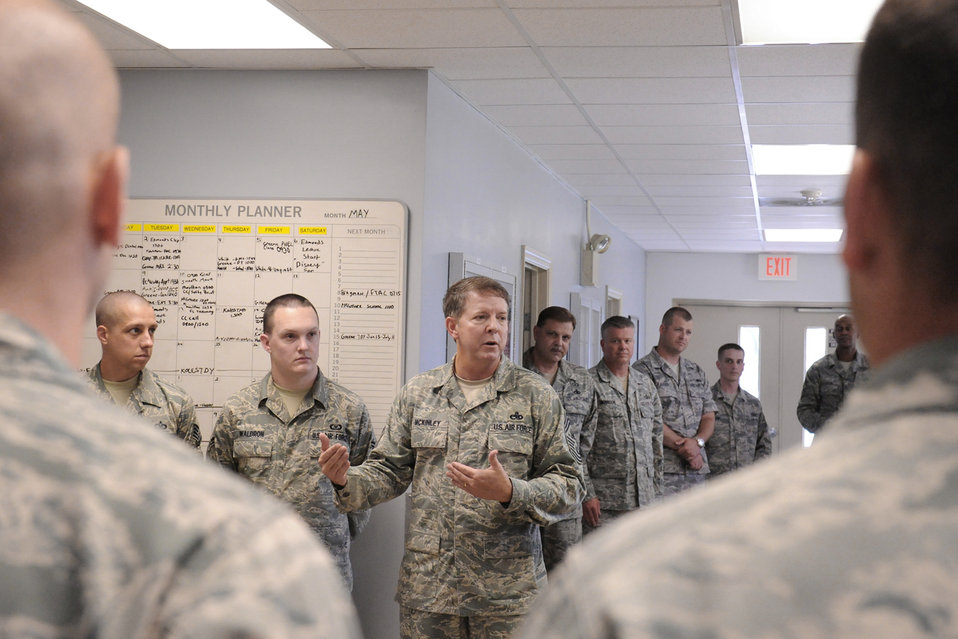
CMSAF visits Seymour Johnson

Chief Master Sgt. of the Air Force Rodney McKinley speaks with Airmen in the aircrew flight equipment building on Seymour Johnson Air Force Base, June 12. Airmen asked about his work in the Pentagon, the Post 9/11 GI Bill and how Seymour Johnson AFB has changed since he was stationed here in the 1970s.